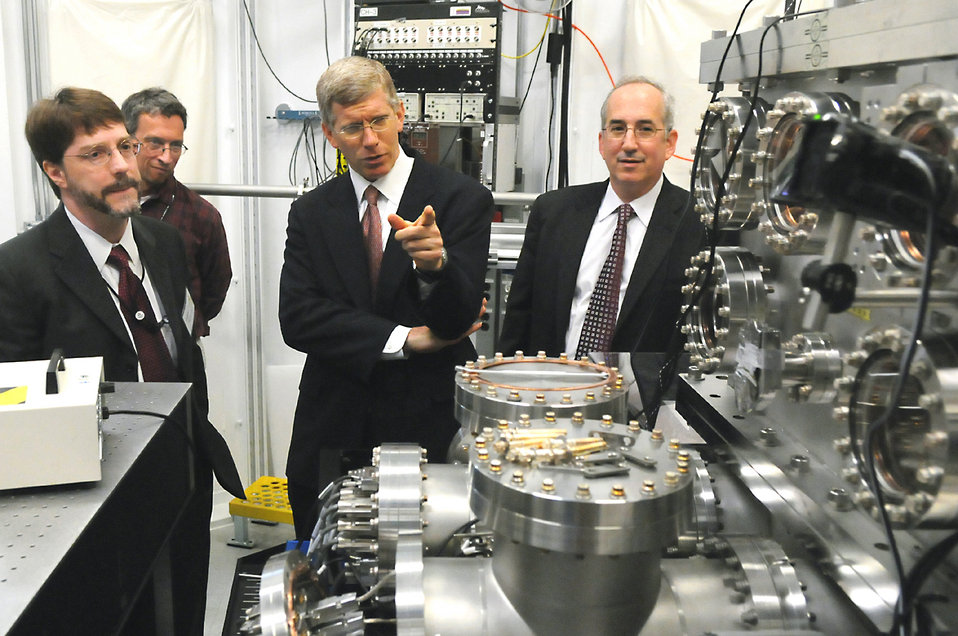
Argonne's Nanoprobe

Deputy Secretary of Energy Daniel Poneman, center, visits the nanoprobe at Argonne's Advanced Photon Source. (Pictured left to right: Stephen Streiffer, Jorg Maser, Daniel Poneman, and Eric Isaacs.)